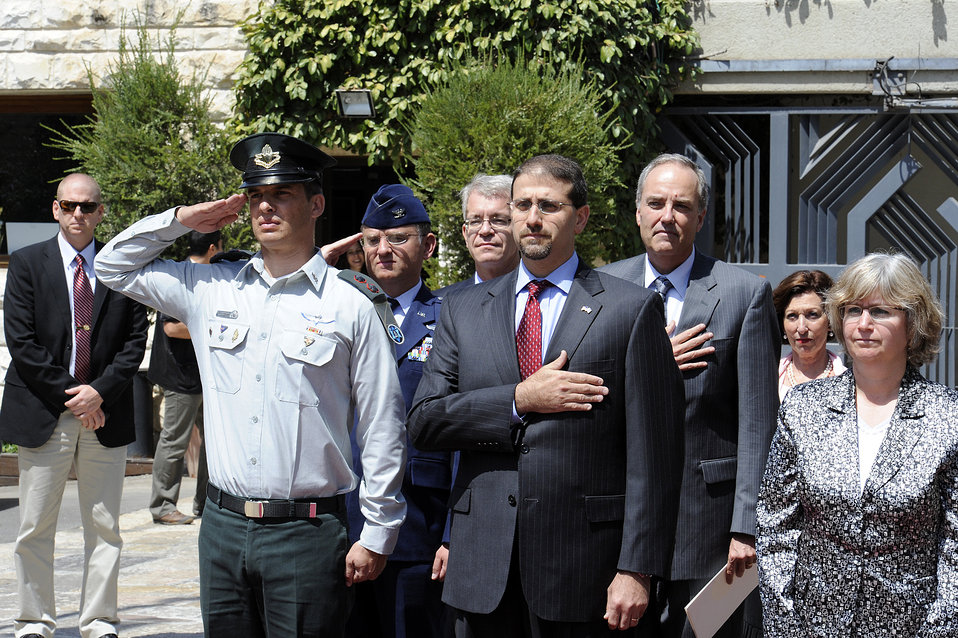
Ambassador Shapiro Prepares To Present His Credentials

U.S. Ambassador to Israel Daniel B. Shapiro prepares to present his credentials to Israeli President Shimon Peres at the President's residence in Jerusalem on August 3, 2011.